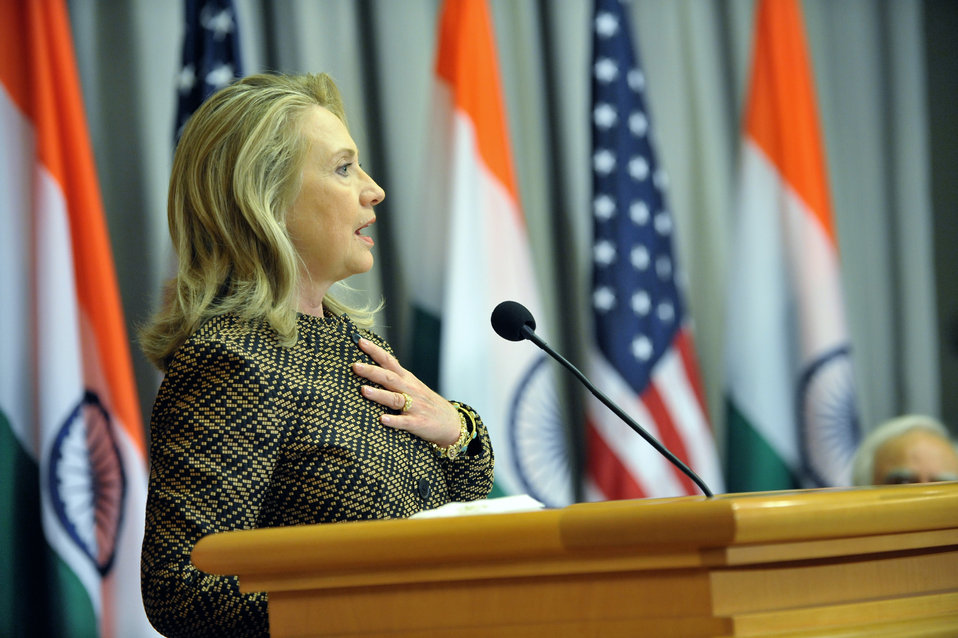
Secretary Clinton Delivers Remarks at the U.S.-India Higher Education Summit

U.S. Secretary of State Hillary Rodham Clinton delivers remarks at the U.S.-India Higher Education Summit at the George C. Marshall Center in Washington, D.C. on June 12, 2012.